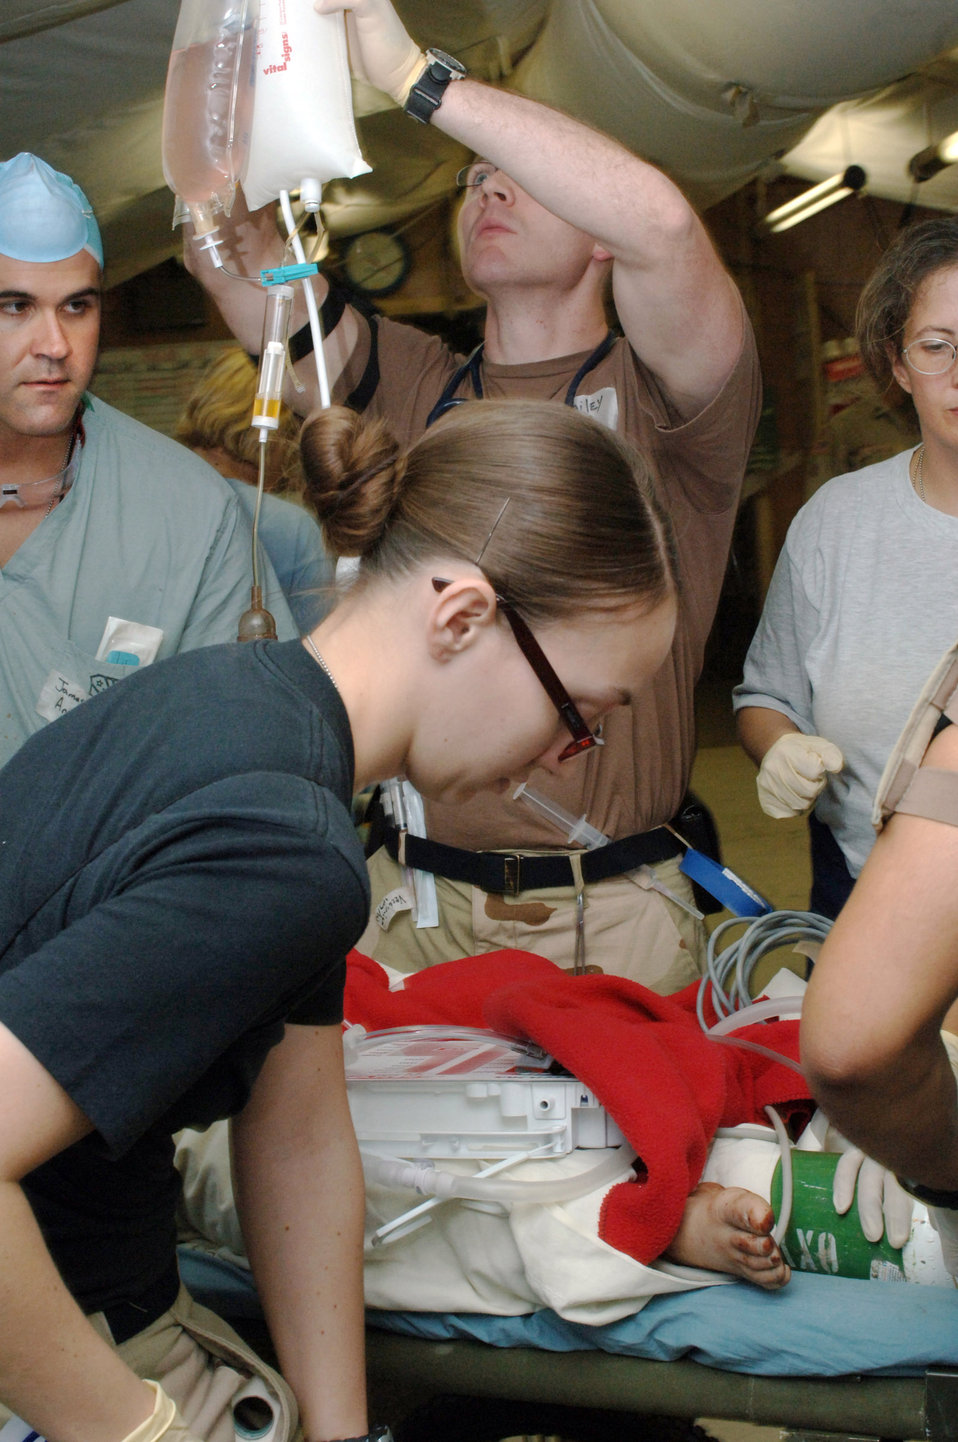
Air Force hospital saves Iraqi lives

BALAD AIR BASE, Iraq -- Air Force medics urgently attend to an Iraqi child who was caught in car bomb blasts that occurred in the town of Balad on Sept. 29. The child was rushed here to the Air Force Theater Hospital where more than 29 Iraqis were treated.